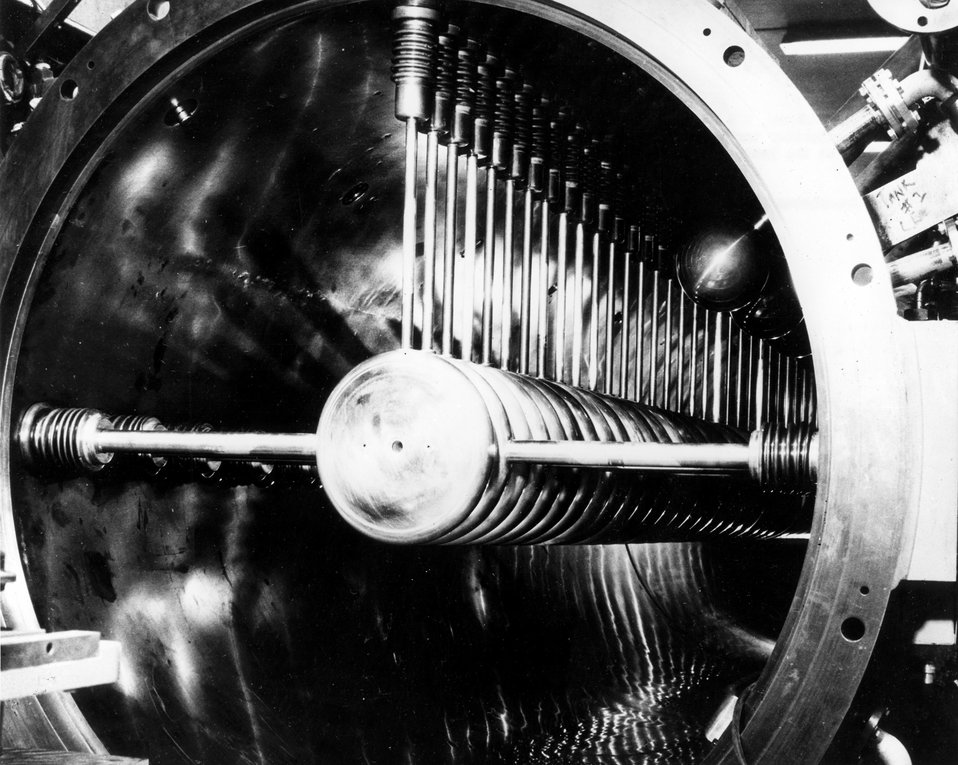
Linear Accelerator tank (37.4 inches inside diameter). c. 1961